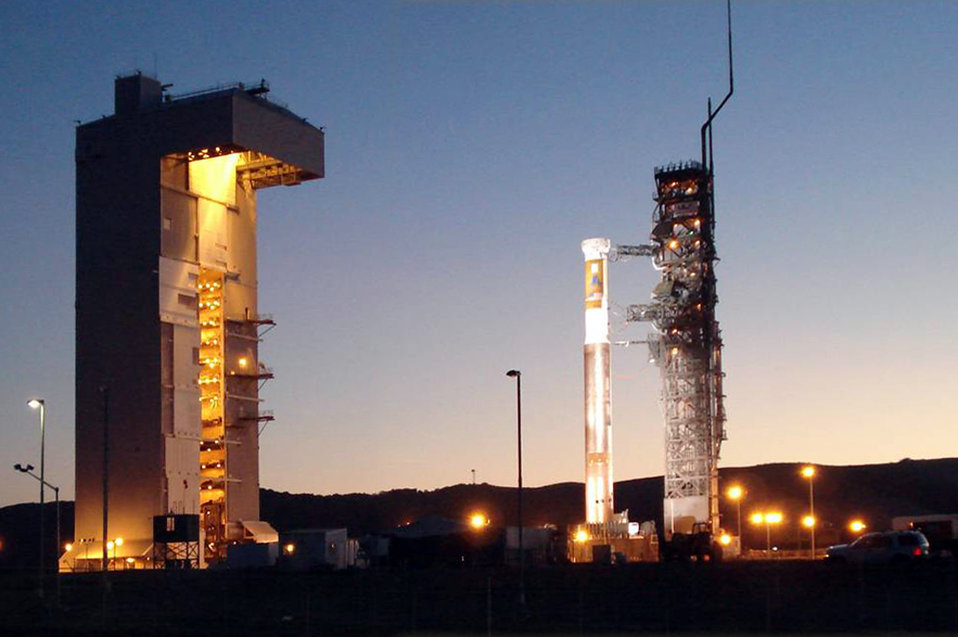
Vandenberg Airmen launch Atlas V rocket

An Atlas V rocket stands on Space Launch Complex-3 prior to its launch at 3:01 a.m. Pacific Daily Time March 13 at Vandenberg Air Force Base, Calif. It carried a National Reconnaissance Office payload and was the first Altas V to launch from the West Coast.